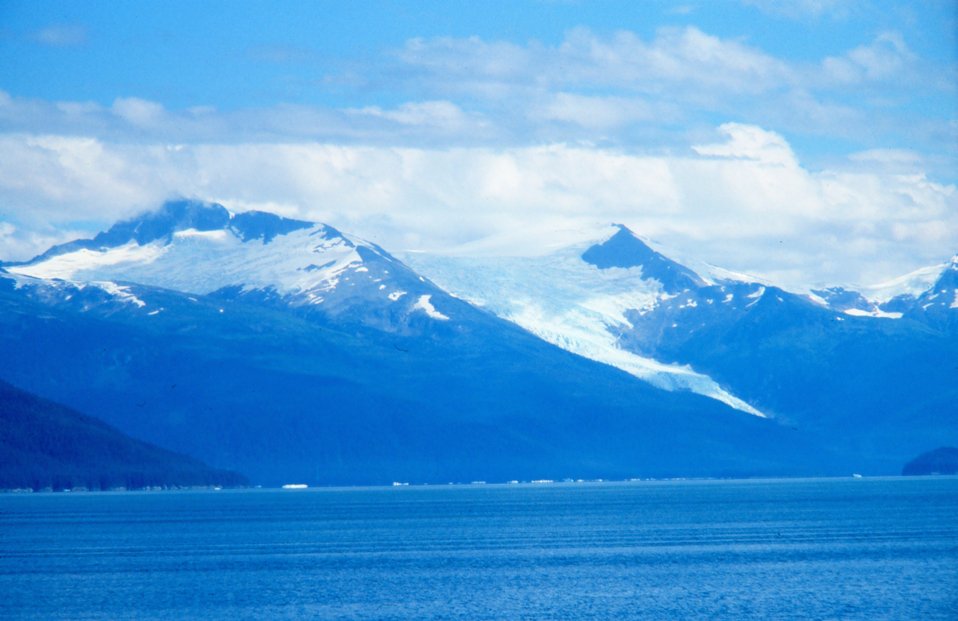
Ice bergs in Tracy Arm area of Stephens Passage